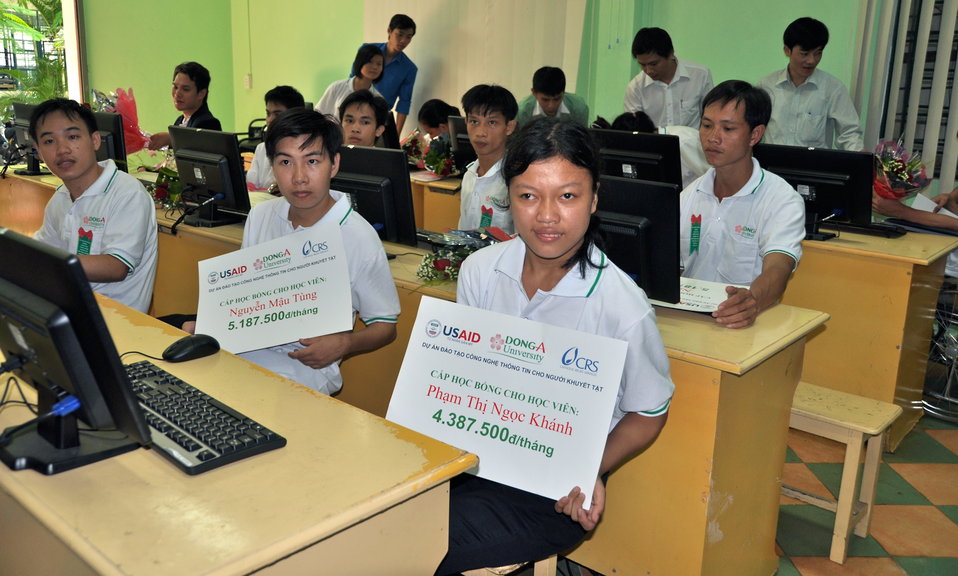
New class of students starts at Dong A Univeristiy with support from USAID and CRS

Photo: @USAIDVietnam
December 3, 2012